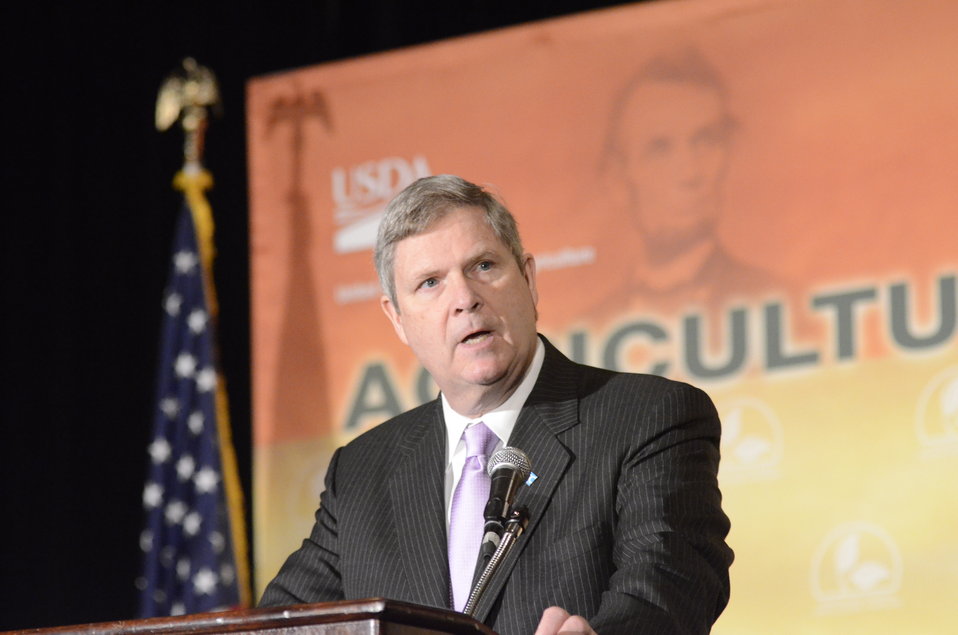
Agriculture Secretary Tom Vilsack makes remarks at the 2012 Agricultural Outlook Forum, “Moving Agriculture Forward” in Arlington, VA. On Thursday, February 23, 2012.